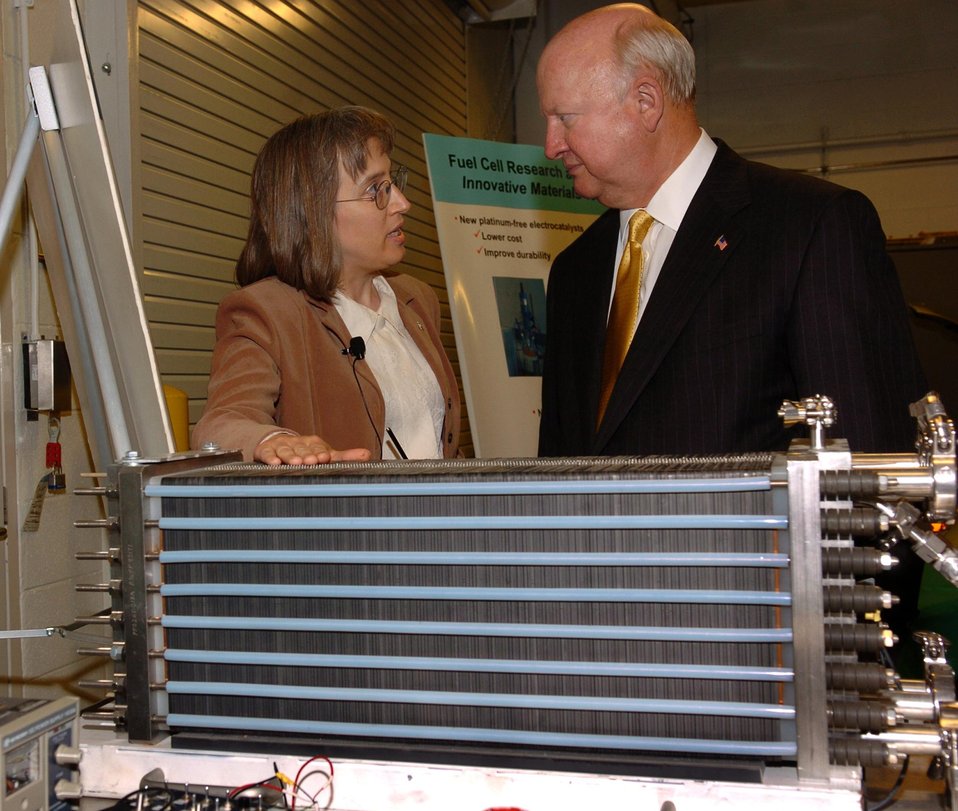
ARGONNE CHEMIST, DEBORAH MYERS WITH SECRETARY OF ENERGY BODMAN IN FRONT OF A 30-KW POLYMER ELECTROLYTE FUEL-CELL STACK.

THE SECRETARY WAS BRIEFED ON ARGONNE'S ROLE IN DEVELOPING NEW MATERIALS FOR FUEL CELLS. ARGONNE RESEARCHERS ARE WORKING ON MANY ASPECTS OF FUEL CELLS TO REDUCE COST AND IMPROVE PERFORMANCE, WHICH SHOULD SPEED THE DEVELOPMENT OF FUEL CELLS FOR STATIONARY AND TRANSPORTATION APPLICATIONS.